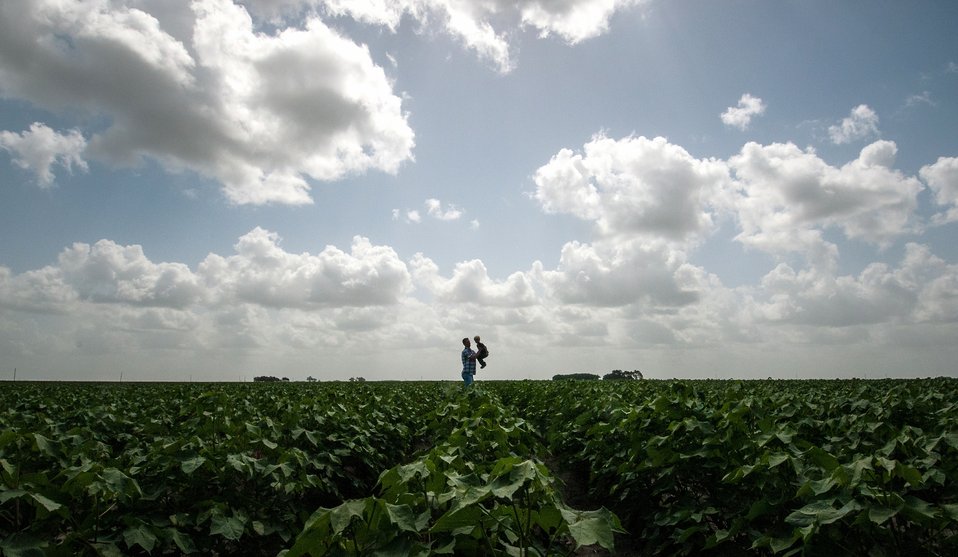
Michael Popp (pronounced Pope) and son Hayden (2) walk in one of the fields of cotton at Popp Farms 05 in El Campo, TX on Jun. 20, 2013. The 2,400 acres of farmland currently grow cotton and milo (grain sorghum) and are part of the United Agricultural Cooperative, Incorporated.